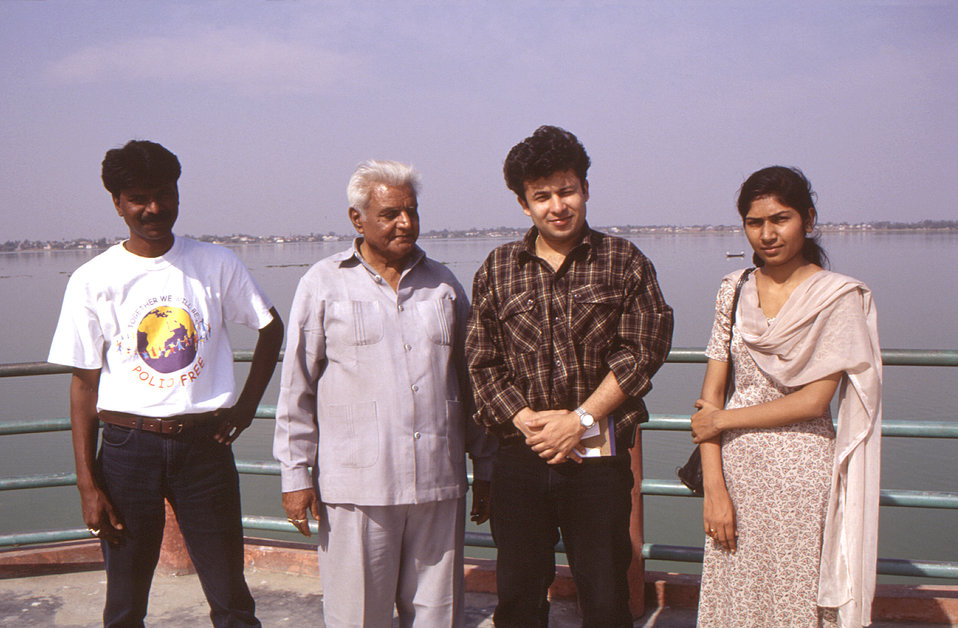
These were members of the local Indian team that worked closely with the CDC Stop Transmission of Polio (STOP) team participants to implement the country's polio eradication program. From left to right was the driver, Mr. Rao, Dr. G.P. Pandey, who'd acted as the team translator, Mr. Parag Sharma, and the administrative assistant from the Gorakhpur office, Ms. Vertika Arya. The image was provided by Chris Zahniser, B.S.N., R.N., M.P.H., a STOP team member and photographer, who was assigned to the state of Uttar Pradesh in northern India, and spent three months working in the Districts of Gorakhpur and Deoria.